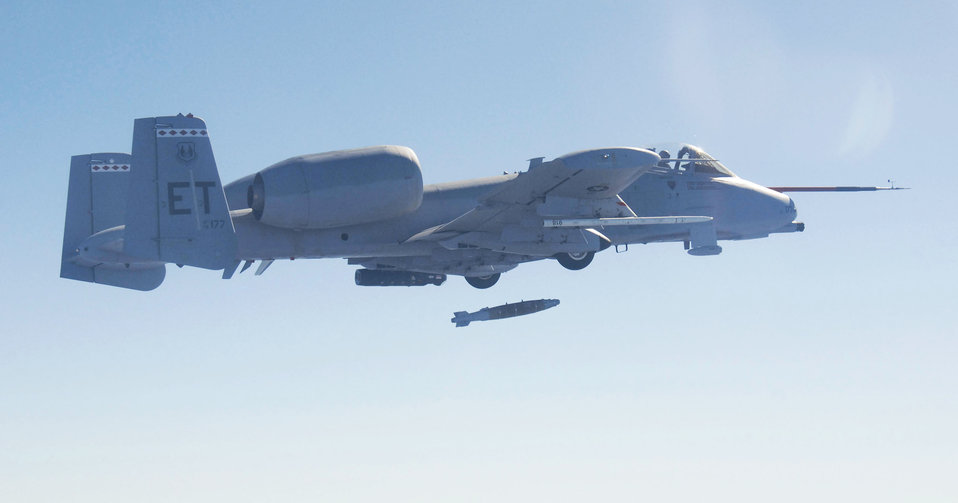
The

Maj. Matthew Domsalla, flying an A-10C Thunderbolt II Nov. 5, makes the first ever drop of a Laser Joint Direct Attack Munition, or LJDAM, from an A-10. This test proved a successful integration of the munition with the A-10, allowing for an outstanding precision targeting capability that will help Air Force aircrews continue to provide effective air support to coalition ground troops. Major Domsalla is with the 40th Flight Test Squadron at Eglin Air Force Base, Fla.